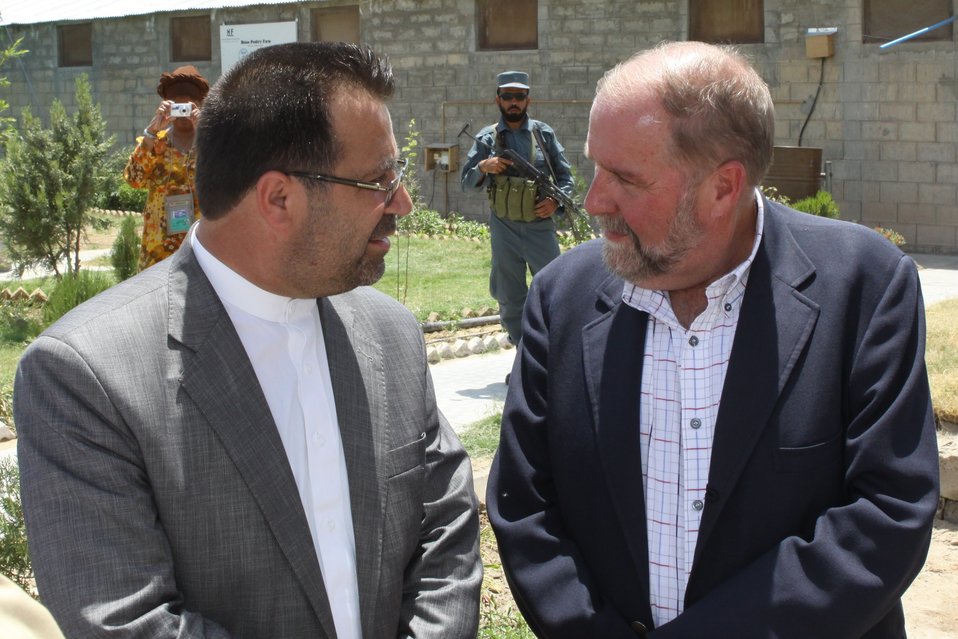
Bolan Poultry Farm